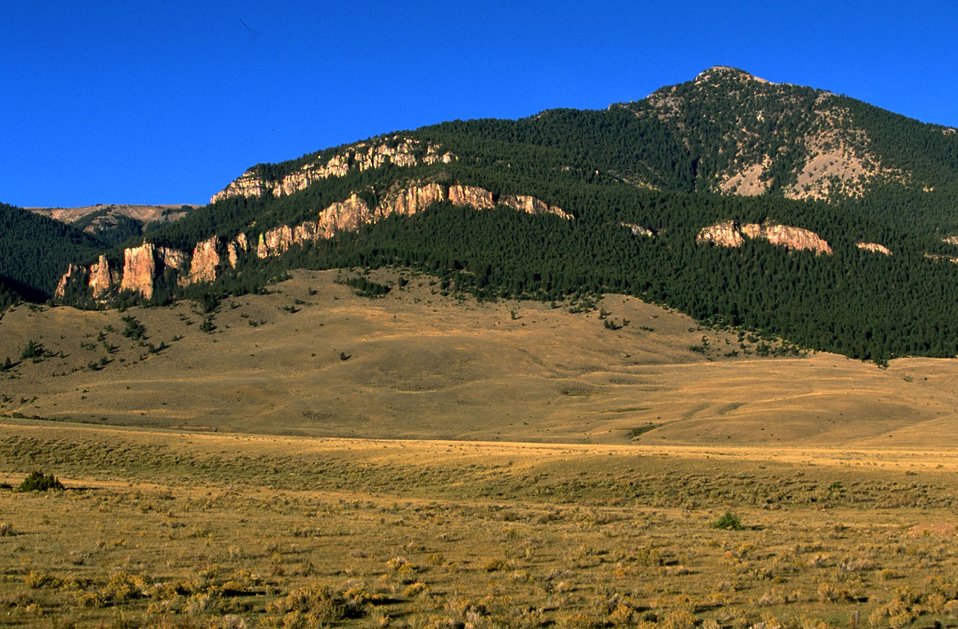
View of mountains across valley